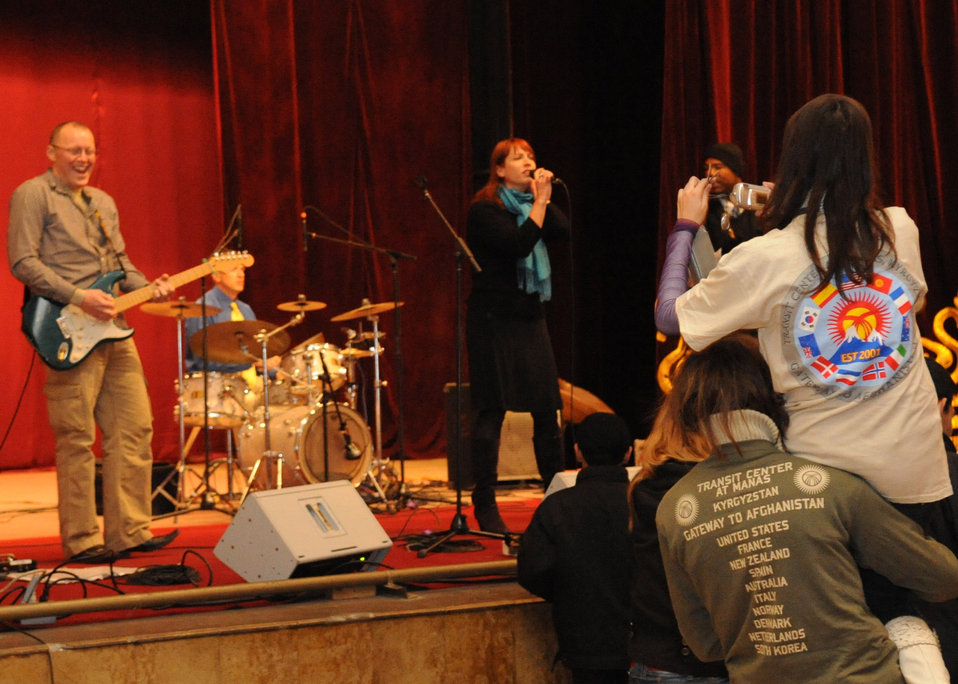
Visit to Kyrgyzstan brings Reserve Generation into community

Reserve Generation performs March 12, 2010, at the House of Culture in Tokmok, Kyrgyzstan.